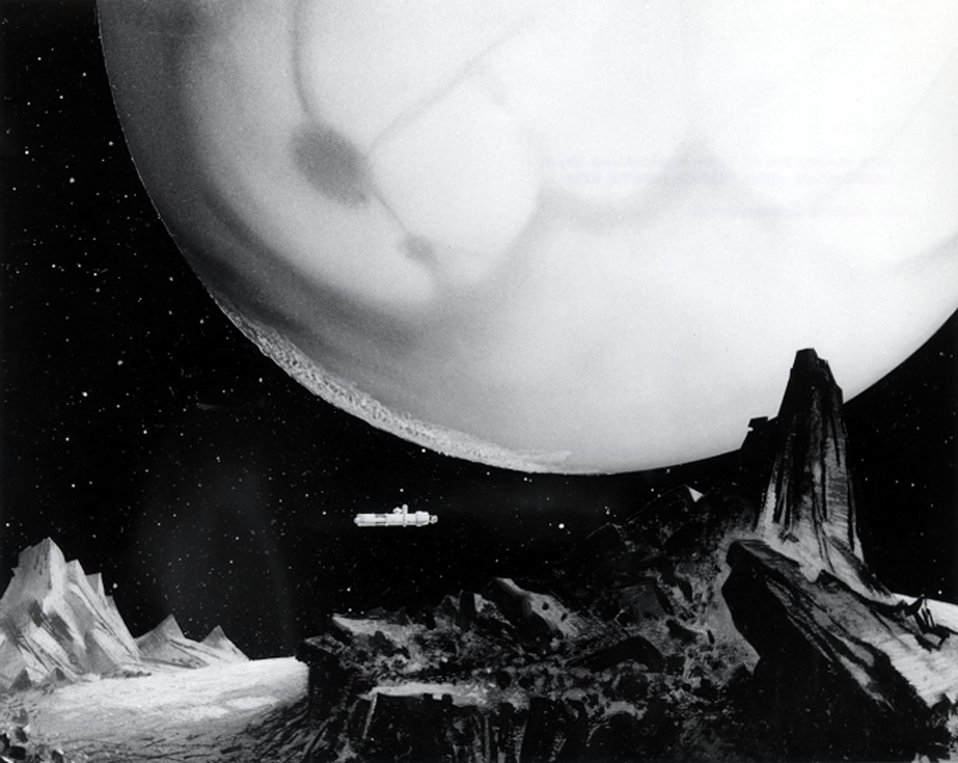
Artist's conception of space exploration showing hypothetical space vehicle nearing Mars.